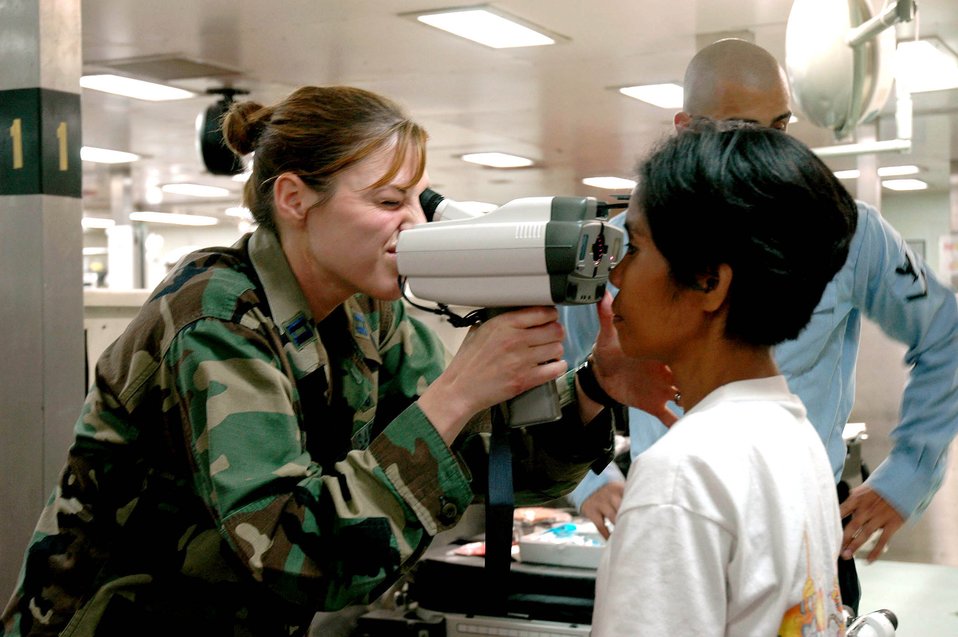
Aboard the USNS Mercy

Capt. Jennifer Owen conducts an eye exam for a Filipina aboard the U.S. Navy hospital ship, USNS Mercy, while anchored off the city of Zamboanga, Philippines, on Friday, May 26, 2006. The crew is conducting humanitarian and civic assistance in South and Southeast Asia and the Pacific Islands. Captain Owen is one of several Air Force medical professionals on the ship.